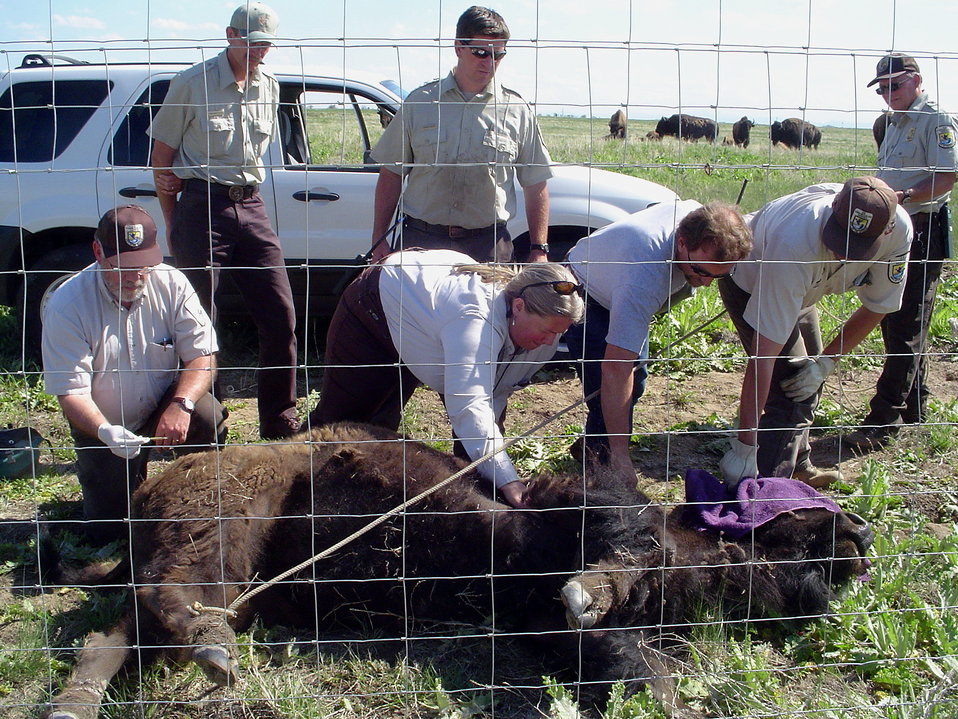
Chemical immobilization training

Dr. Tom Roffe of the Wildlife Health Office monitors a bison immobilized by staff at Rocky Mountain Arsenal National Wildlife Refuge during the practical portion of an immobilization training class.